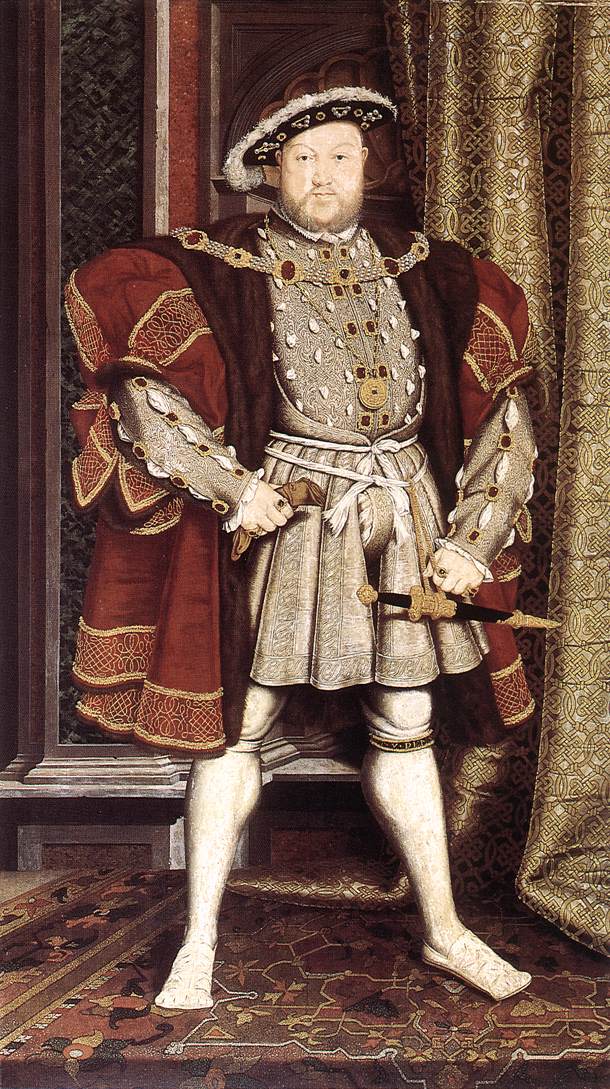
Holbein henry8 full length